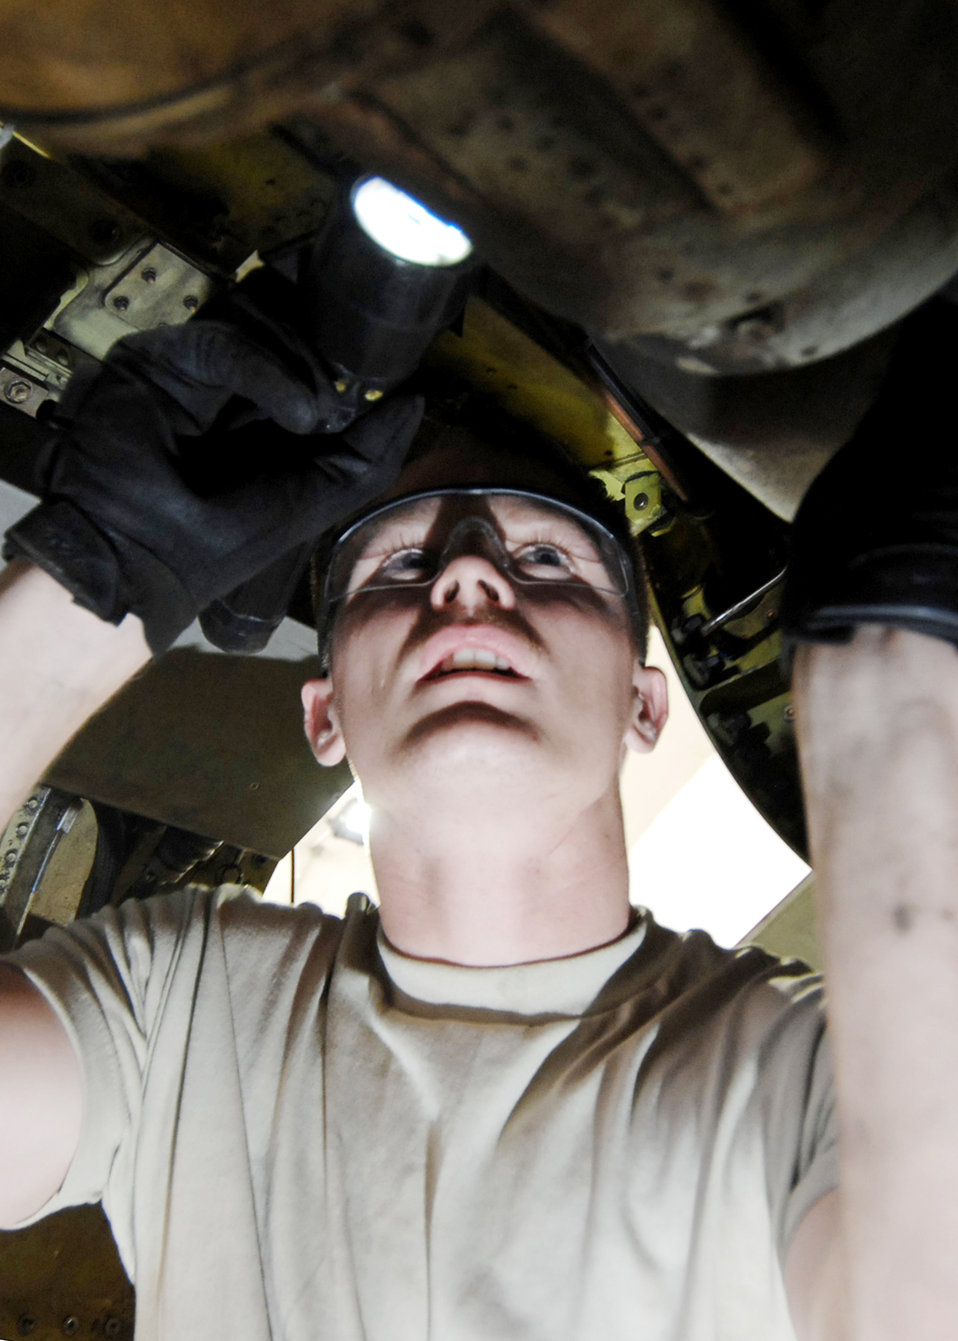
Looks good from here

Airman Travis Sharp inspects the lower fuselage of an F-16 Fighting Falcon Oct. 20, 2009, at Joint Base Balad, Iraq. Airman Sharp is a crew chief assigned to the 332nd Expeditionary Maintenance Squadron and deployed from Spangdahlem Air Base, Germany.